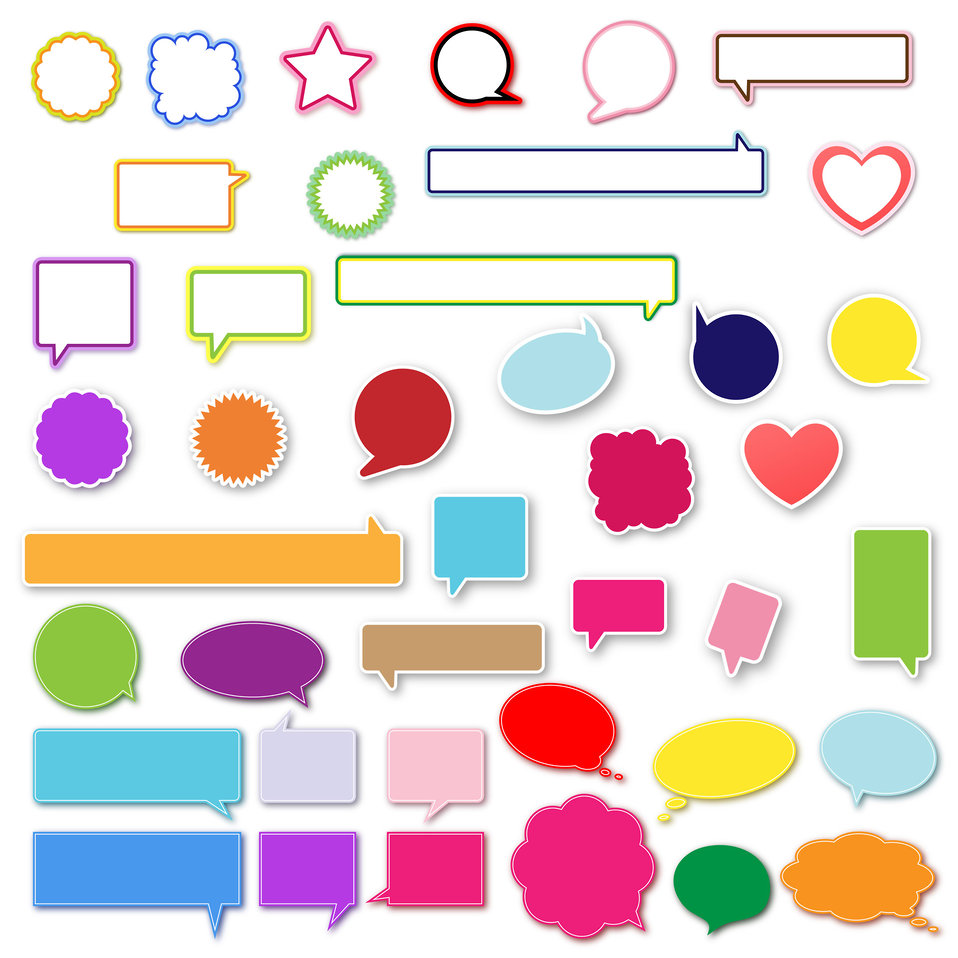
Speech bubbles

Lots of colorful speech bubbles.